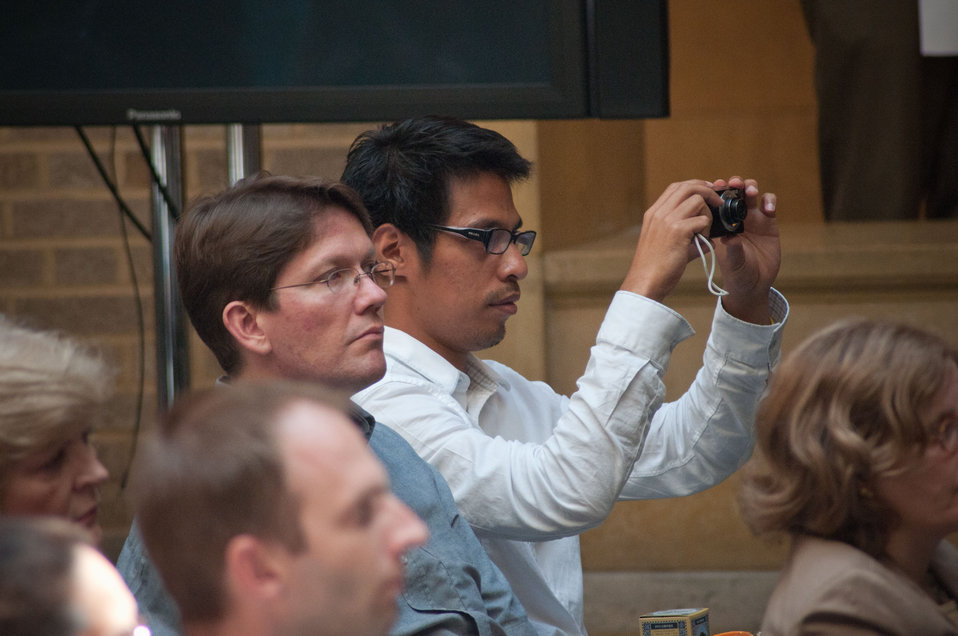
Guests at the International Year of Forests (IYOF) celebration on Friday, June 3, 2011 on the Patio of the Whitten Building, U.S.Department of Agriculture in Washington, DC.